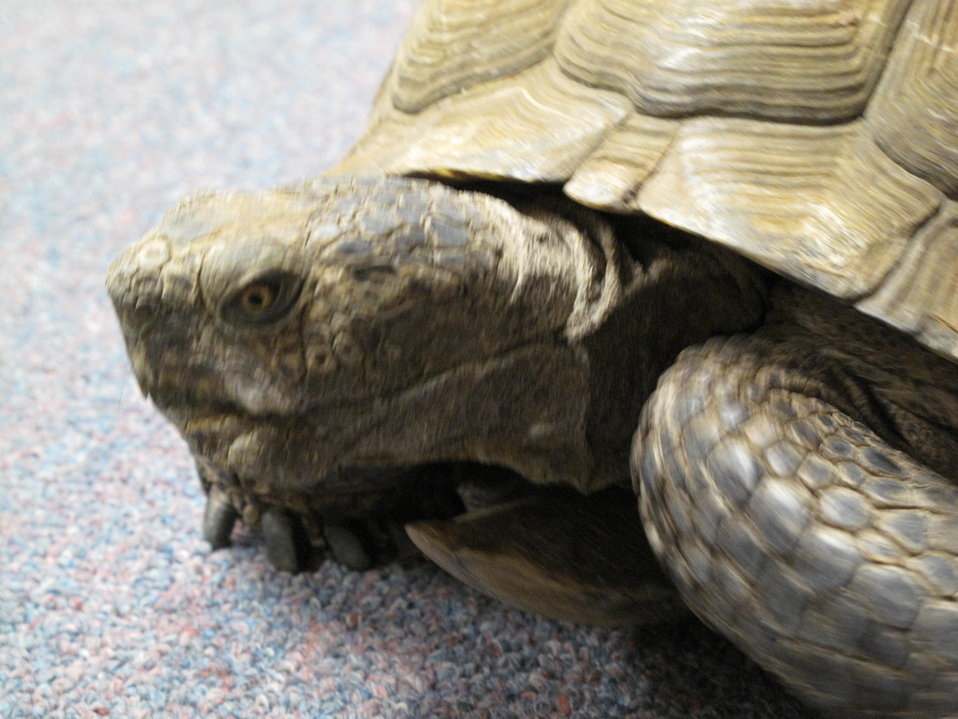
Crush the Desert Tortoise